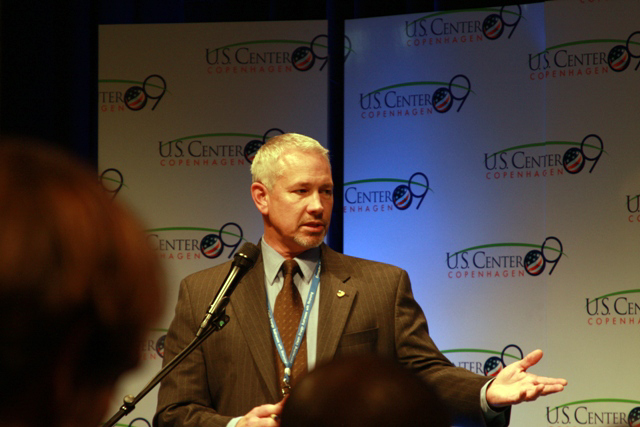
Development Agenda for Clean Energy and Transfer of Technologies

Bill Breed, U.S. Agency for International Development participates in a panel presentation on the Development Agenda for Clean Energy and Transfer of Technologies at the U.S. Center at COP15, Bella Center, Copenhagen, Denmark on December 11, 2009.